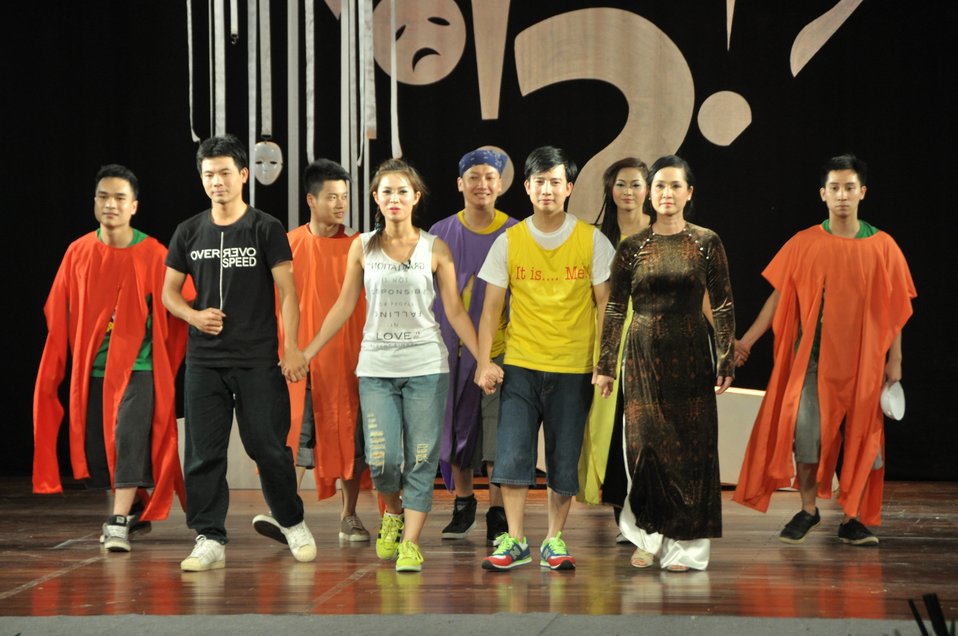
PEPFAR Musical Questions and Exclamations